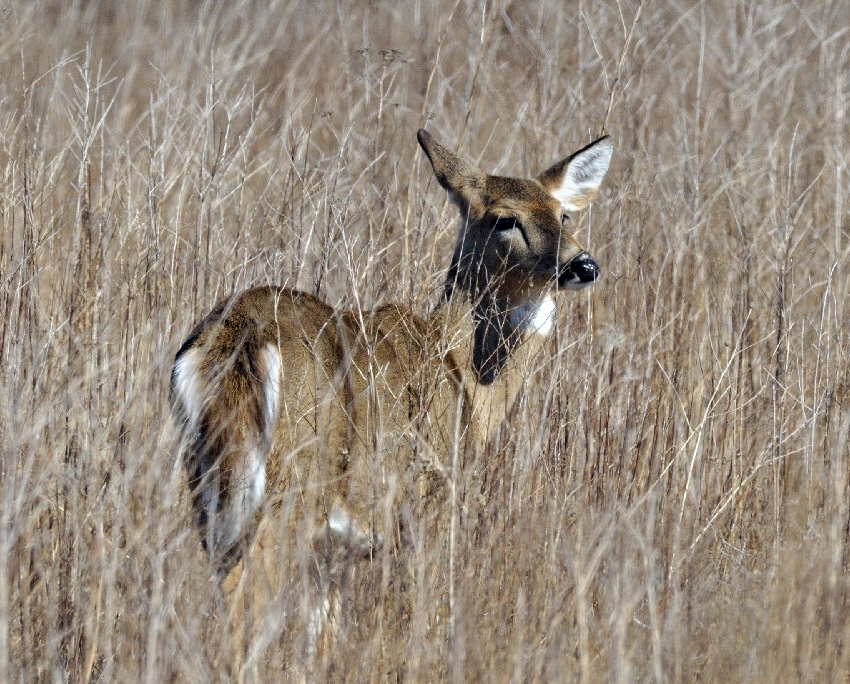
Photo of the Week - White-tailed Deer (RI)

Photo of the Week - 2/26/12

White-tailed deer photographed at Sachuest Point National Wildlife Refuge.